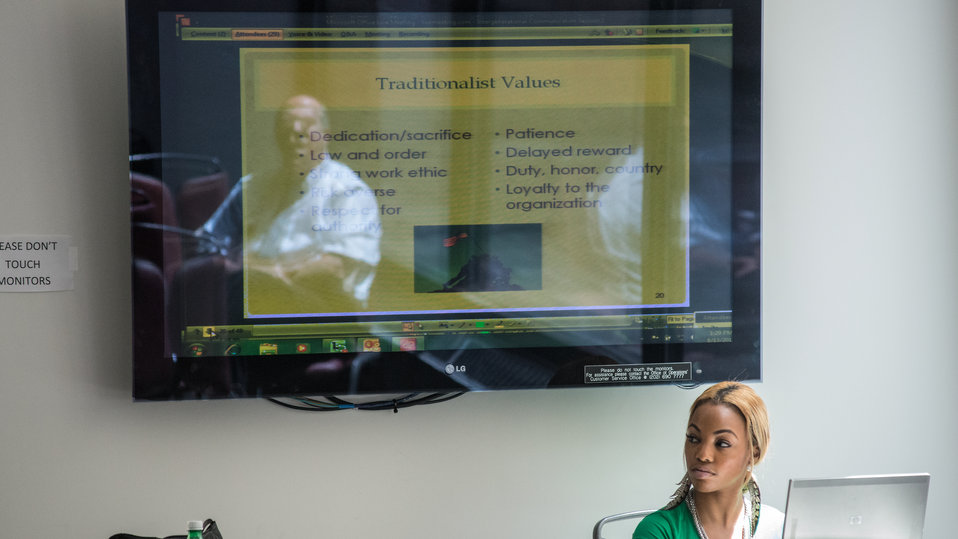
A U.S. Department of Agriculture employees takes notes on a laptop during Sage Horizons Consulting Owner Cynthia Gibbs remarks at USDA’s Rural Development (RD) 2nd Annual Cultural Transformation kickoff opening ceremony and forums, themed “Employees Influencing Change,” on Tuesday, Aug. 13, 2013 at USDA Washington, D.C.